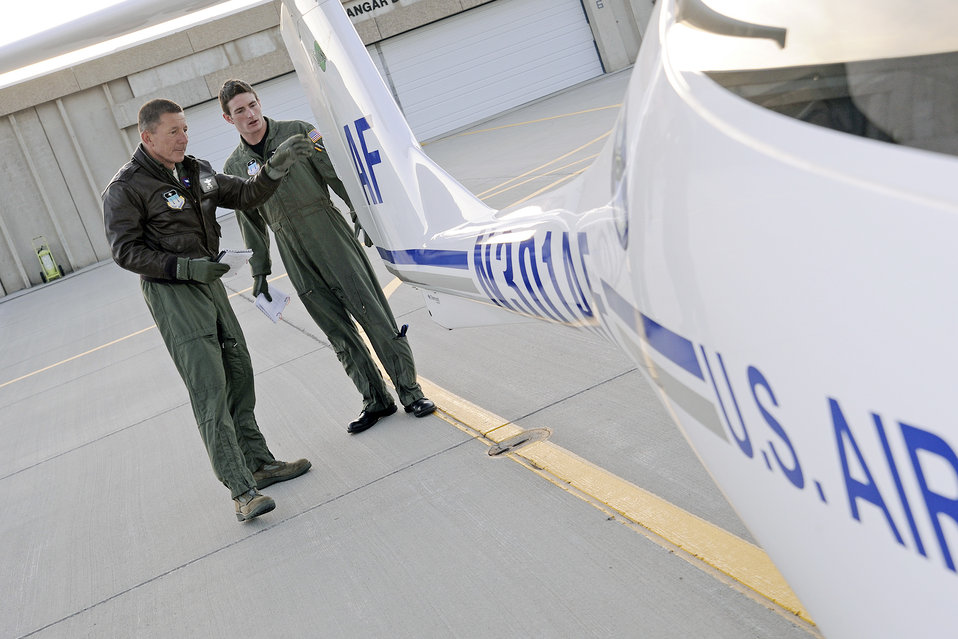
T-52A training flight

Lt. Gen. Mike Gould and Cadet 1st Class Luke Hyder perform a pre-flight inspection of a T-52A aircraft April 15, 2010, on the airfield at the U.S. Air Force Academy, Colo. The T-52A is the newest addition to the 557 Flying Training Squadron primarily used for cadet flight training. General Gould is the U.S. Air Force Academy superintendent.